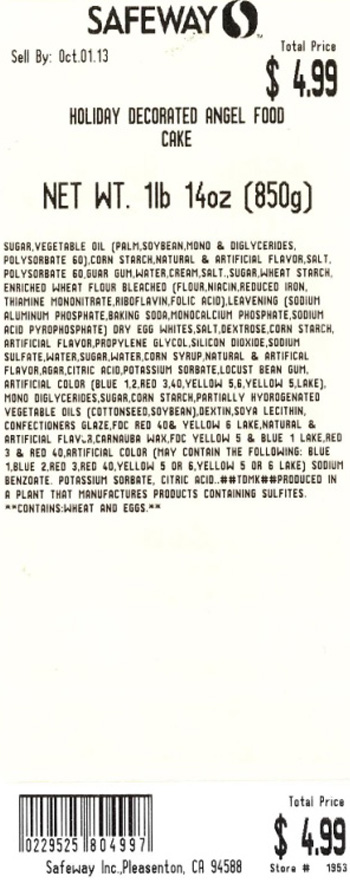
RECALLED – Angel Food Cakes

September 26, 2013 – Product Recall – Safeway Recalls Several Varieties of Angel Food Cake Due to Undeclared Soy and Milk Allergens.